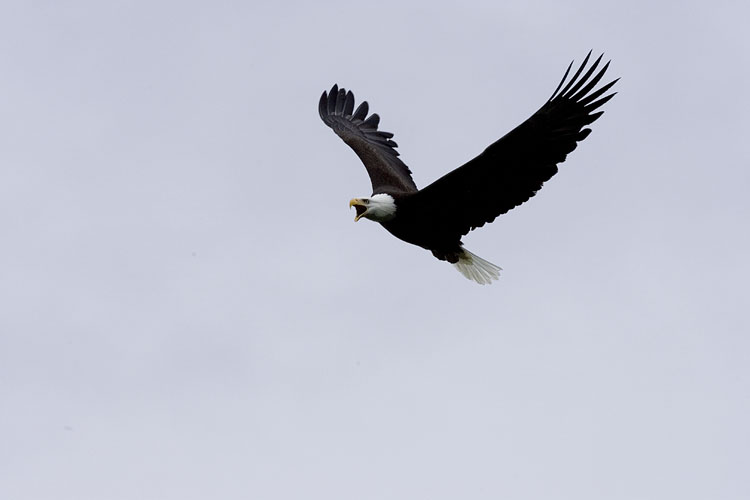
KOD Hildebrand (2)

Kodiak National Wildlife Refuge- Wildlife